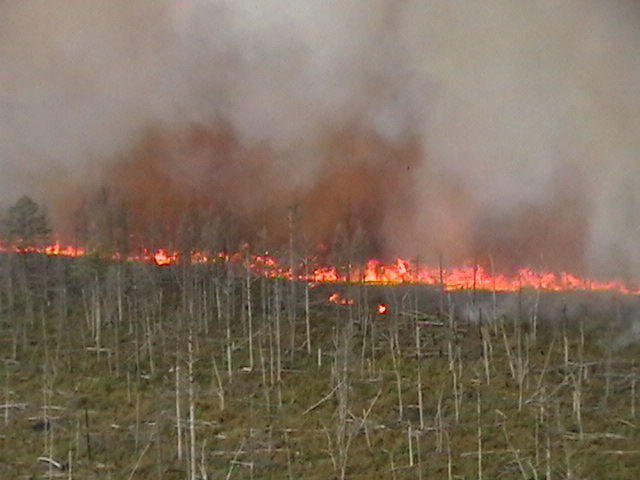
Lateral West fire front

Suffolk, VA, August 2011: Flames and smoke create an impressive front at the Lateral West Wildfire burning on Great Dismal Swamp National Wildlife Refuge.